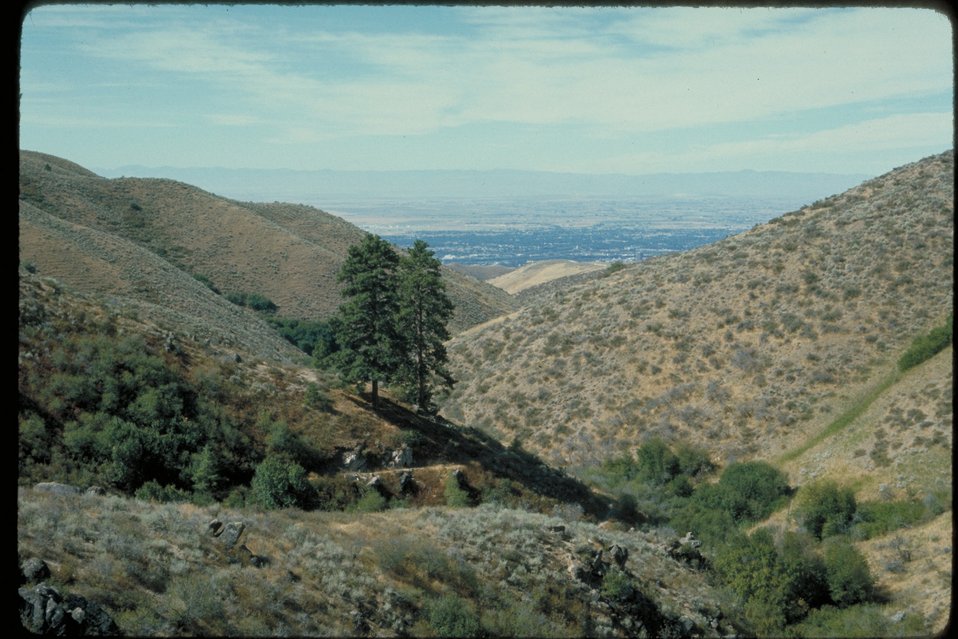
Hulls Gulch Boise Front Four Rivers Field Office LSRD Lower Snake River District